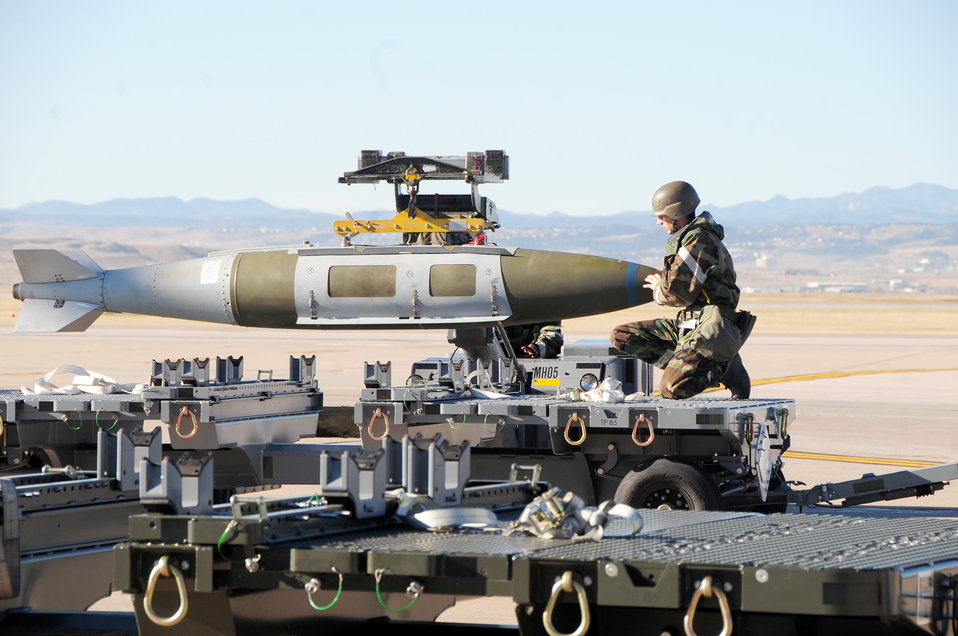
Phase II Operational Readiness Inspection

Airman 1st Class Timothy Foreman assists in lowering a guided bomb unit-31 onto a bomb trailer during a Phase II Operational Readiness Inspection Oct. 15, 2010, at Ellsworth Air Force Base, S.D. The munitions Airmen load inert GBU-31's onto B-1B Lancers during the inspection. Airman Foreman is a munitions load crew member of the 28th Munitions Squadron.